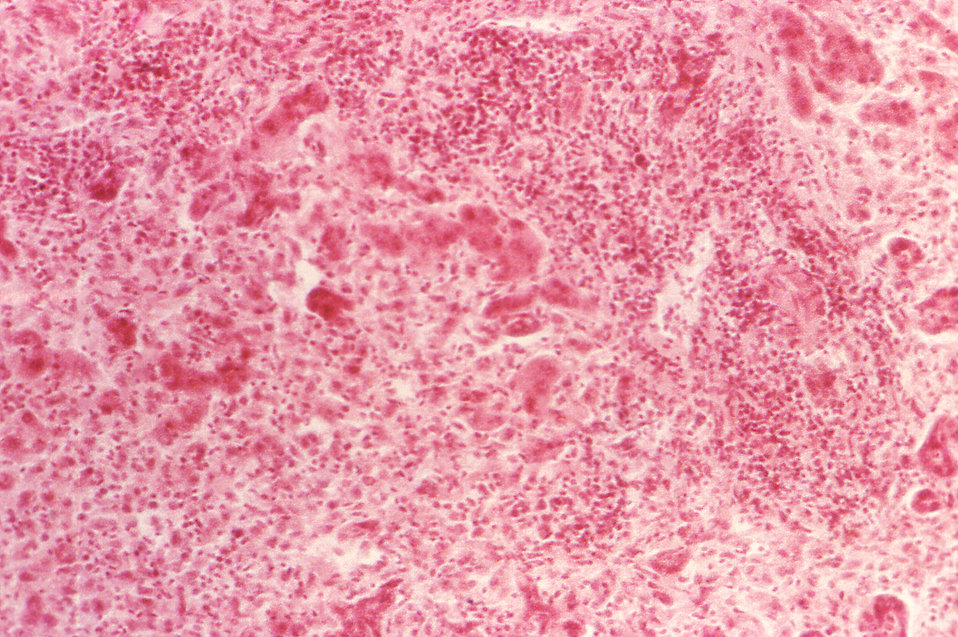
Under a magnification of 100X, this hematoxylin-eosin-stained (H&E) photomicrograph depicts the cytoarchitectural changes found in a liver tissue specimen extracted from a viral hepatitis patient. In this particular view, note that there are 'several layers of hepatic parenchyma, which are still recognizable in the midst of massive necrosis. There is no fatty change, but there is an extensive inflammatory infiltrate.'.